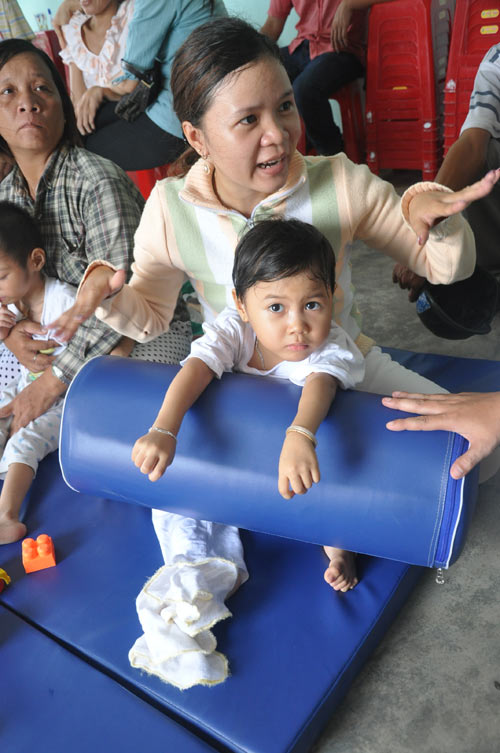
USAID-supported Community Rehabilitation Unit, Danang

Four-year-old Kha Han enjoys coming to a rehabilitation unit in her Danang where she can exercise and interact with other children.